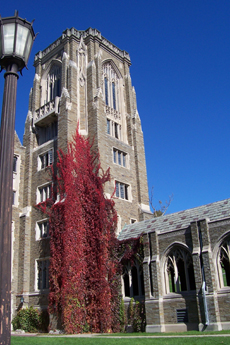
en:Quill and Dagger Tower, part of Lyon Hall and the War Memorial, on en:Cornell University's West Campus. This photograph was taken by Cornellian24. en:Category:Cornell University buildings